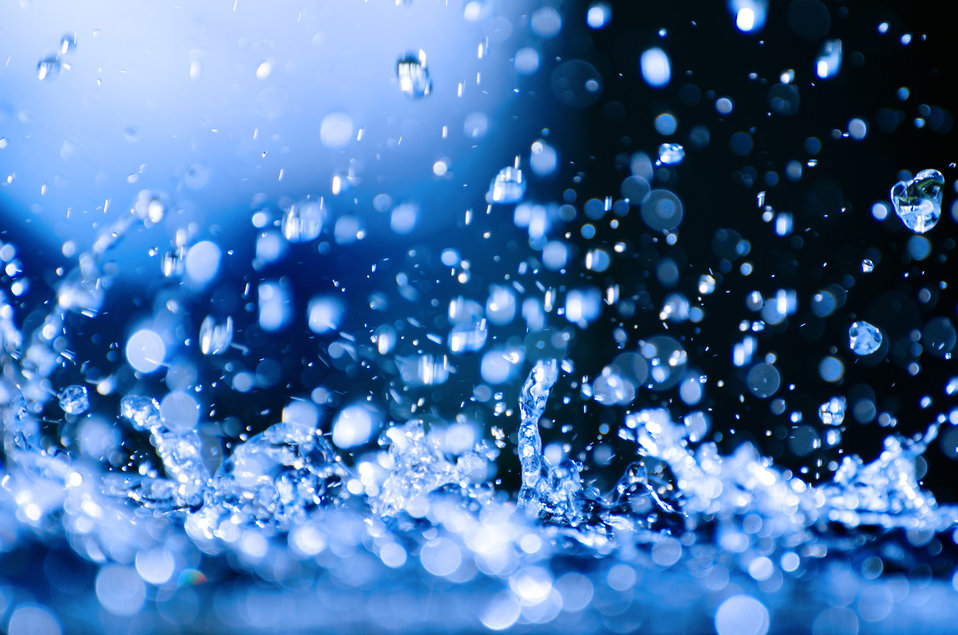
Splash water - background.